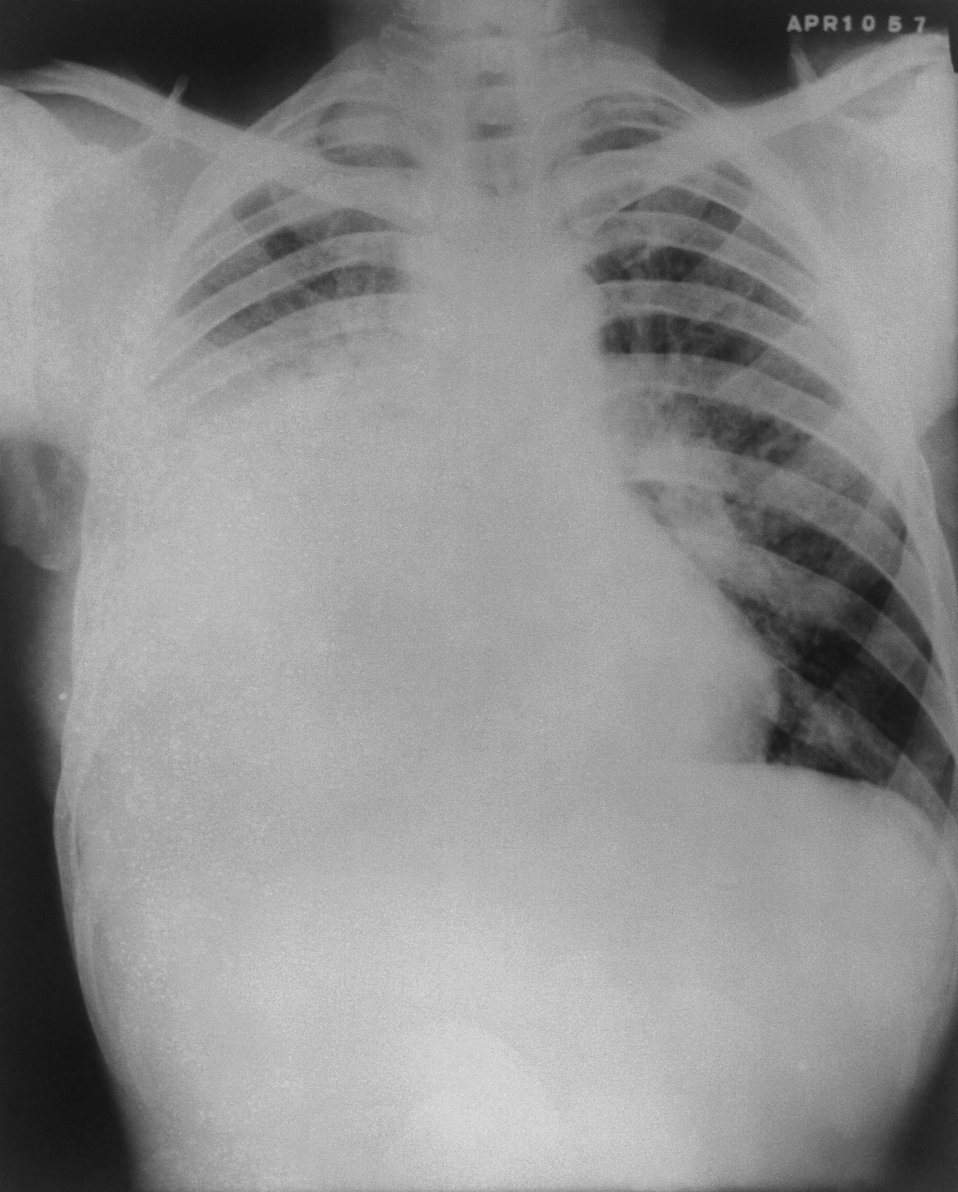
This 1957 plane film x-ray revealed an enlarged mediastinum, diffuse parenchymal involvement and consolidation within the right lower lobe or the right lung. The etiologic nature of this condition is unknown.